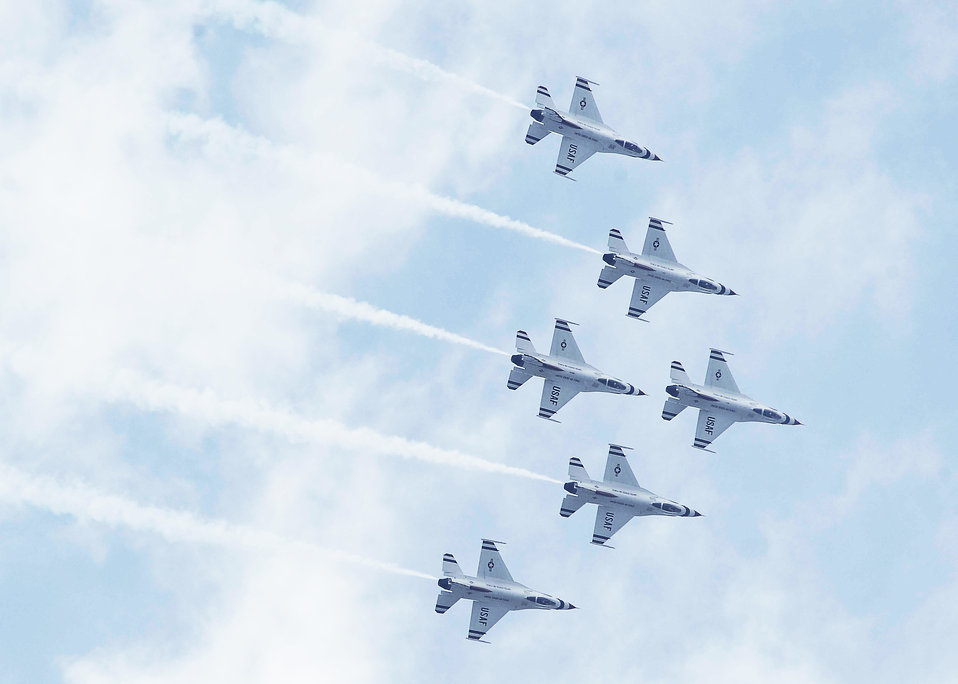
Thunderbirds at Dyess

The Air Force Thunderbirds fly high into a formation during the Delta Roll as they perform for more than 30,000 spectators during the Dyess Big Country Air Fest May 1, 2010, at Dyess Air Force Base, Texas.